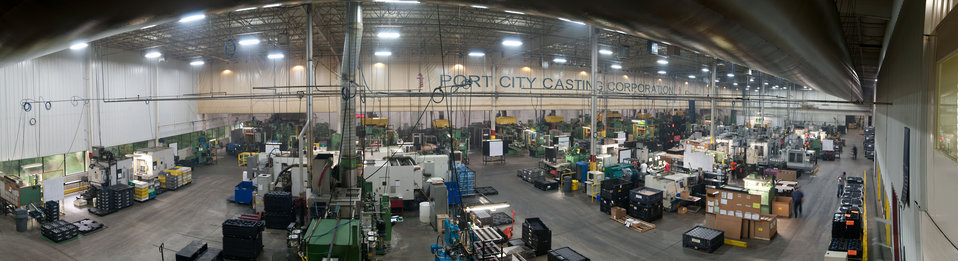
Port City Group’s Port City Castings Corporation manufactures high-pressure aluminum die-castings, mostly for the automotive industry, in Muskegon, MI, facility on Wednesday July 20, 2011. Port City Group boosted its employment by 12 percent over last year thanks to two Rural Business Guaranteed Loans totaling $9.6 million. In its 80,000 sq. ft. facility, machines that range from 800 – 1,600 tons, and cast A380 aluminum alloy products from melted ingots of aluminum, into automotive components of U.S.A. made vehicles. The process features a variety of robotic presses; computer controlled machining; quality control facility; and complete measurement and testing laboratory. In 2009 banks were backing out of loans for PCG equipment purchase agreements. The U.S. Department of Agriculture (USDA) loan guarantee helped make the loan possible with its guarantee. PCG obtained the needed robotic and other equipment. This resulted in a stable workforce that has since grown. When asked about their USDA experience, Port City Group Sales Manager Laura LaGuire said, “It was great! They were very helpful. Everything that came up was handled smoothly, the money came in place when it was needed, and it was a very smooth transition.”